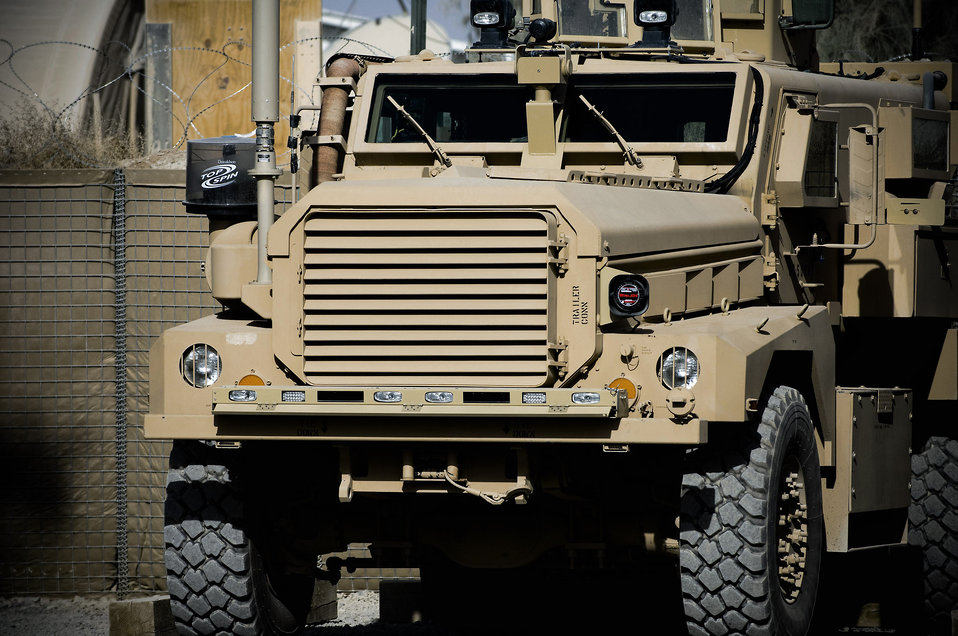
Airmen combat explosive threats in Afghanistan

A mine-resistant, ambush-protected vehicle stands ready at the 755th Air Expeditionary Group Explosive Ordnance Disposal Operation Location-Bravo, Kandahar Air Field, Afghanistan. MRAPs provide a great deal of safety and security for EOD teams, incorporating thick armor and a V-shaped hull to deflect blasts away from passengers.